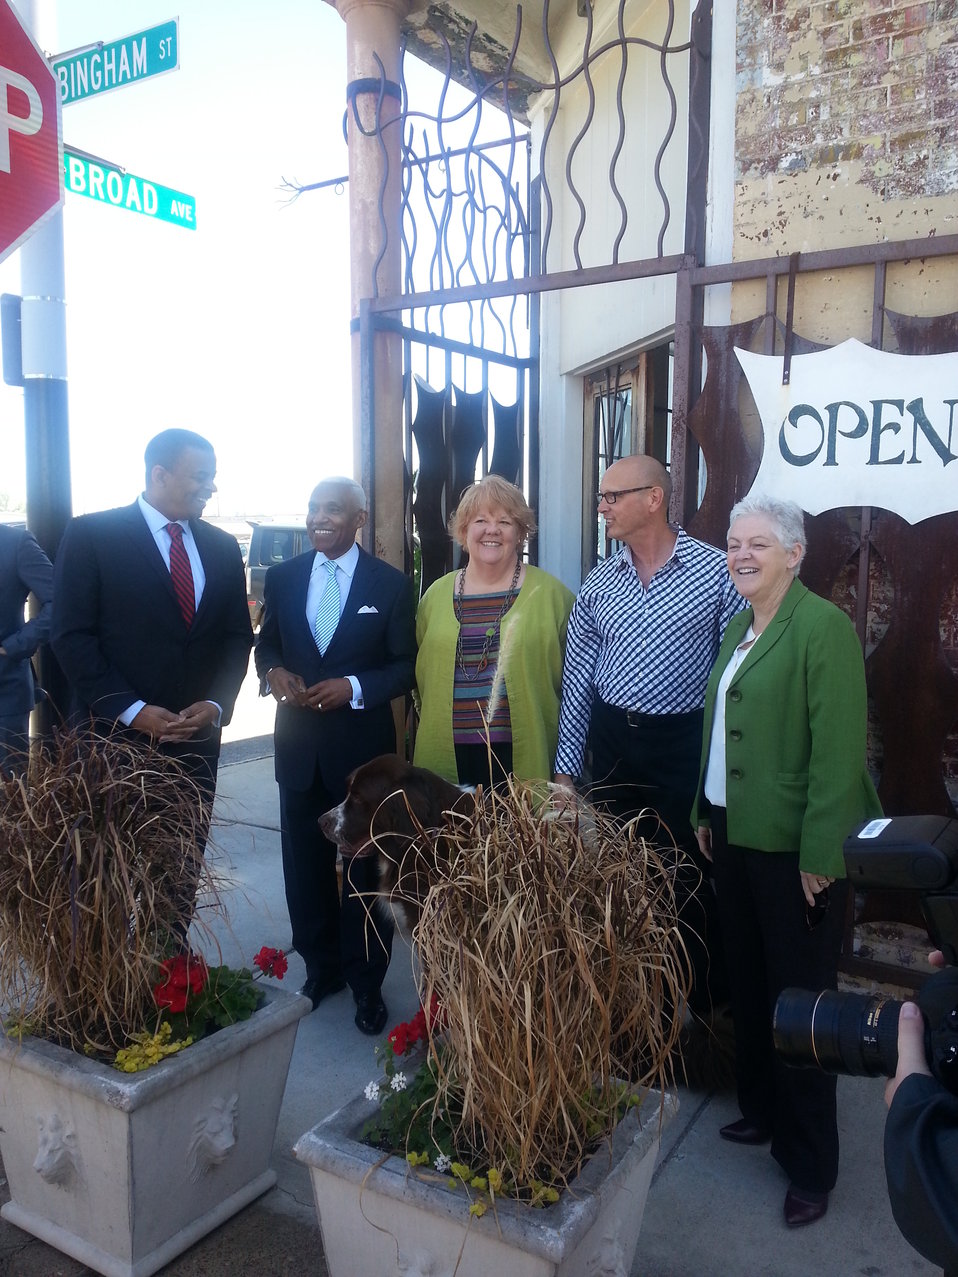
The shop on Broad Avenue

Administrator Gina McCarthy and DOT Secretary Foxx met Memphis Mayor AC Wharton and community leaders to see how the arts are helping revitalize Broad Avenue.